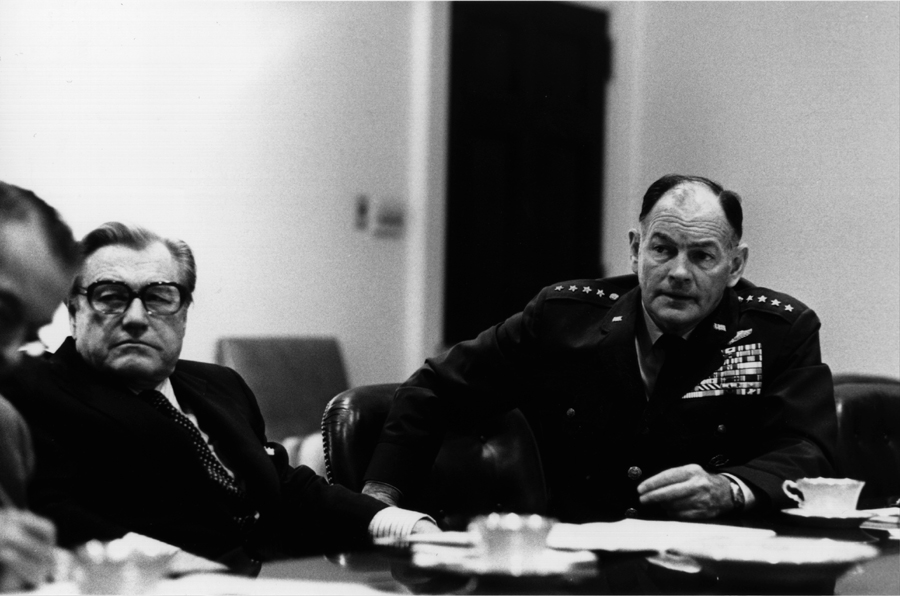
General George S. Brown

1970's -- Vice President Nelson A. Rockefeller and General George S. Brown, Chairman of the Joint Chiefs of Staff, attend an evening meeting of the National Security Council to discuss the evacuation of Saigon. April 28, 1975. George S. Brown became the first Air Force chief of staff since Gen. Nathan Twining to hold the position of chairman of the Joint Chiefs of Staff.